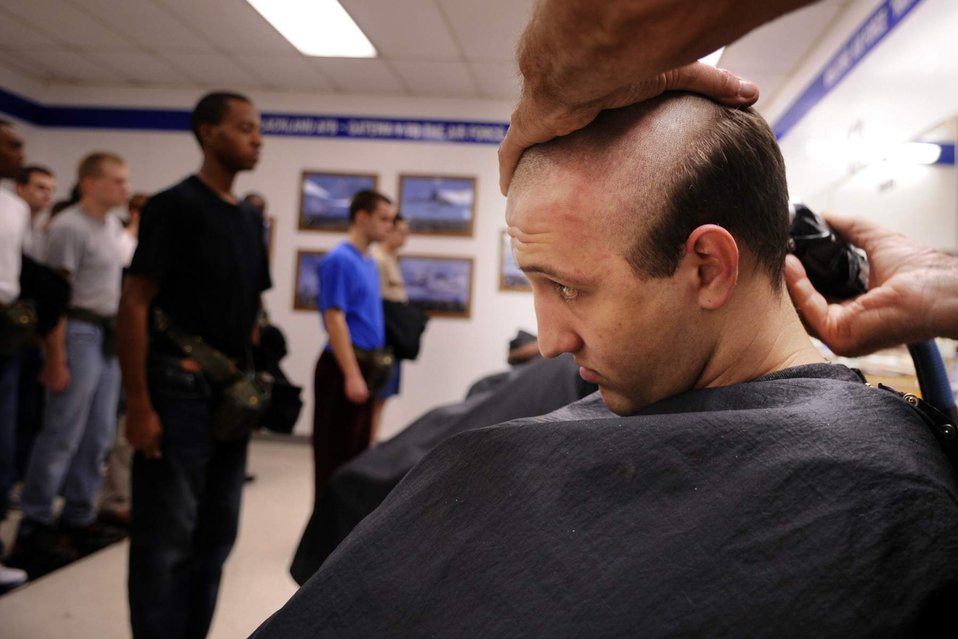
Basic training

A basic trainee receives his first military hair cut during his initial days at Lackland Air Force Base, Texas.